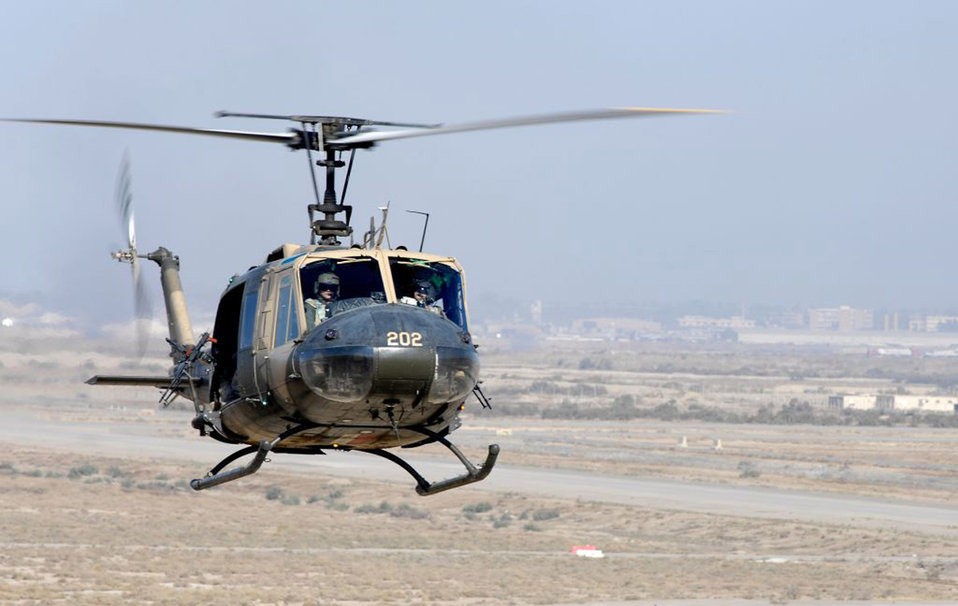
Iraqi air force supports Mosul, other operations

An Iraqi aircrew flies an Iraqi air force Huey II in support of ground operations in Mosul. Members of the Iraqi air force have increased its role during three missions to include Mosul, Sadr City and Bosrah.